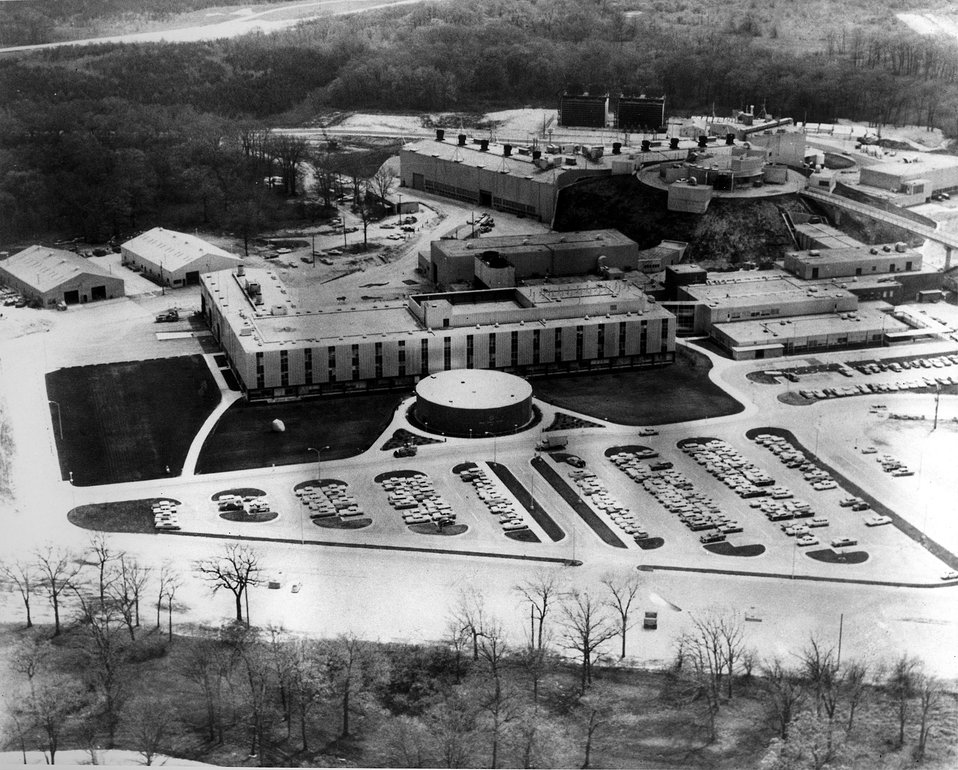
High Energy Physics Building, Argonne, 1965